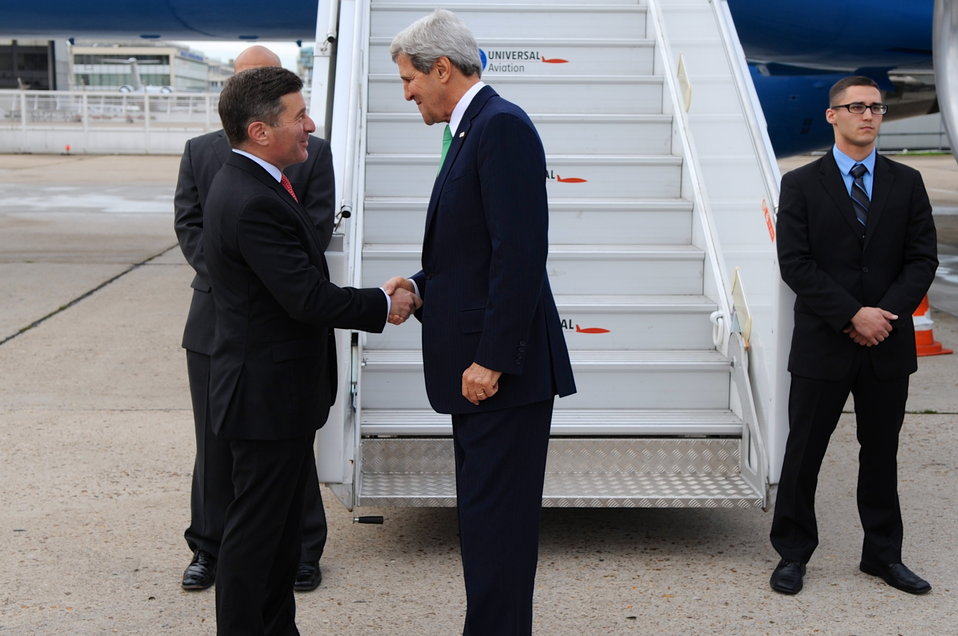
Ambassador Rivkin Greets Secretary Kerry In Paris

U.S. Secretary of State John Kerry shakes hands with U.S. Ambassador to France Charles Rivkin upon arriving in Paris for meetings with Arab leaders focused on Syria, on October 21, 2013.